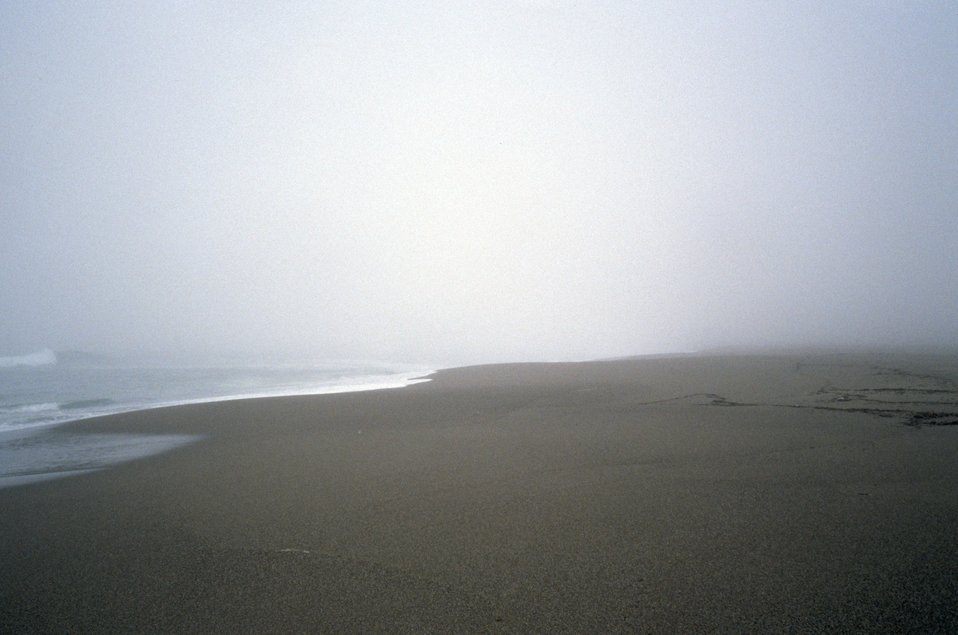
Point Reyes Great Beach. Sun beginning to shine through the fog.